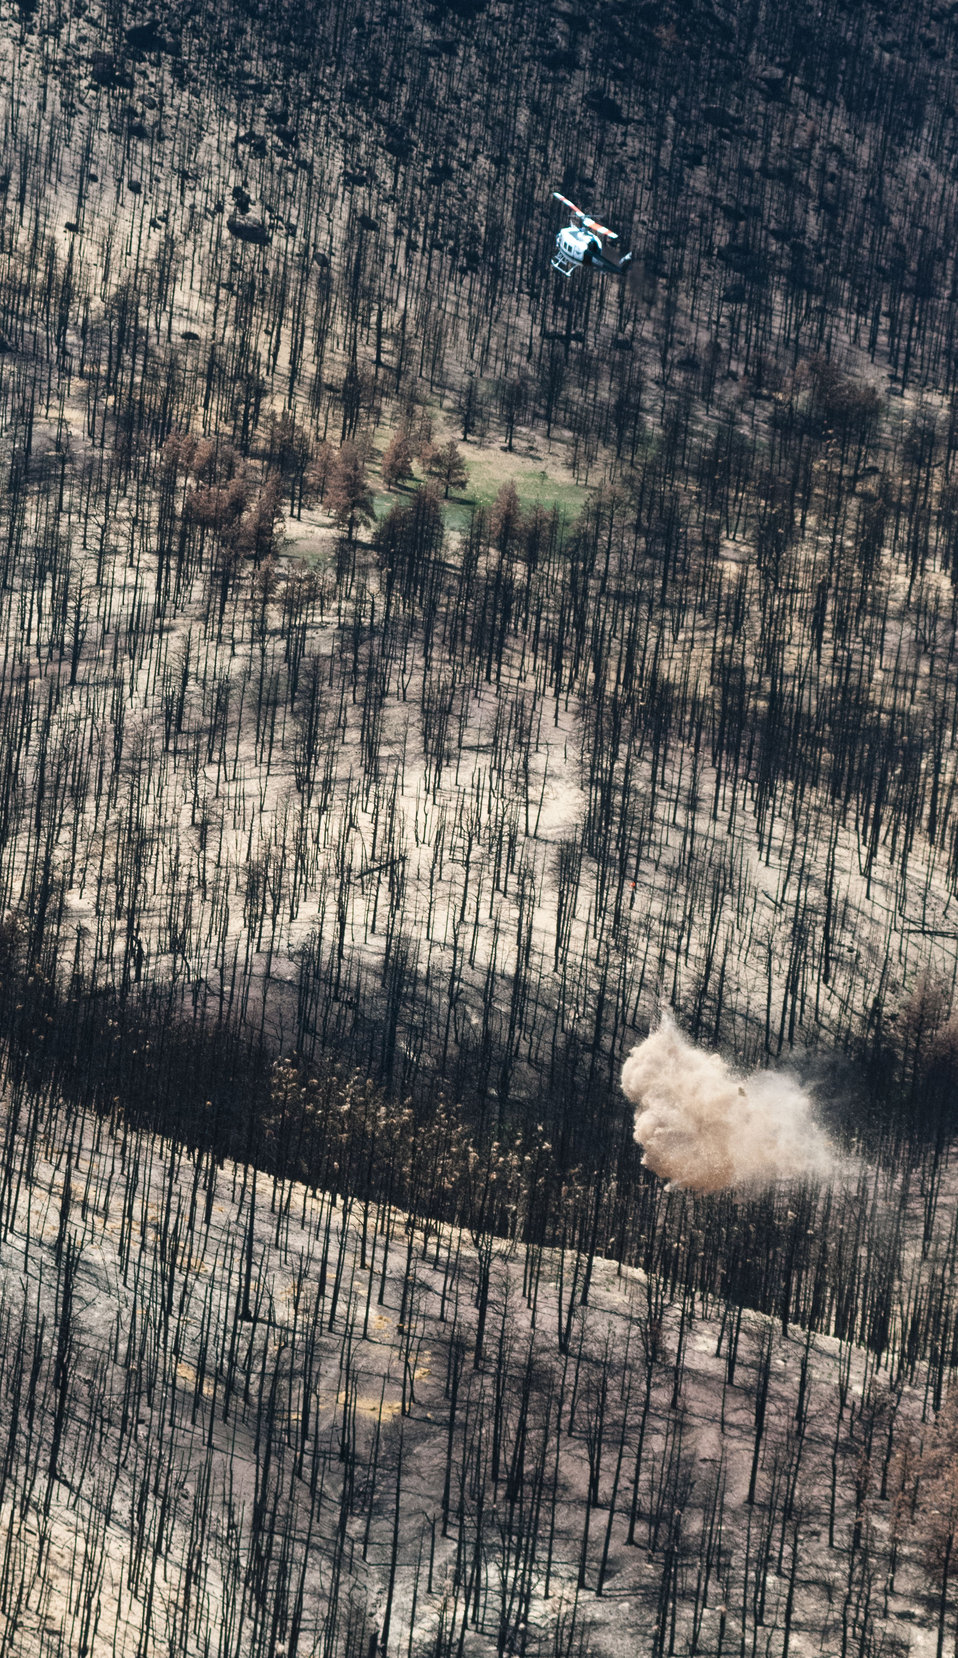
Mountain West Helicopter pilot Thierry Richards, releases one ton of straw from his Bell UH-1H helicopter on to a burned out area of the Poudre Canyon mountainside near Fort Collins, Colo., on Friday, July 20, 2012. This is an aerial application of straw will mitigate soil and ash runoff from the mountainous terrain leading to Seaman Reservoir, drinking water resource for the City of Greeley. Forest Service lands receive straw, while private and other lands receive a seed mix and straw to promote ground cover plant growth on ash-covered lands. In total, 1,800 tons of straw will be applied during the 14-day operation. One quarter of the cost was paid by the City of Greeley and the U.S. Department of Agriculture funded the remainder. The Hewlett Gulch Fire was started by a camper’s alcohol stove, on May 14, at the saddle of a picturesque mountain ridge along the Hewlett Gulch Trail of Poudre Canyon, in the Roosevelt National Forest, 60 miles north of Denver. At it’s peak more than 400 firefighters were battling fires being pushed by 50 mph winds that helped blacken over 12-square-miles of dry ground cover, brush and trees. Many of the trees were already dead and tinder dry from beetle-kill. Their efforts have successfully kept water in the reservoir clean and clear, while downstream water flow has gone from famous Colorado clear water to nearly black flows of water heavily laden with ash, silt, and burnt debris that recent thunderstorms have already washed down from the mountainsides.